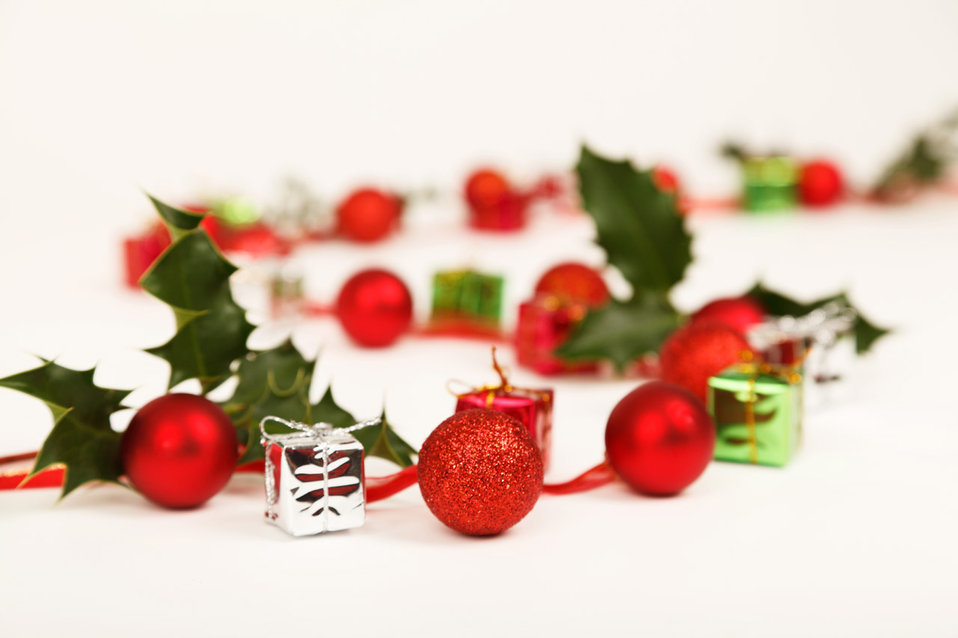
Baubles presents and holly

A curve shape created with baubles. presents and holly on white background.